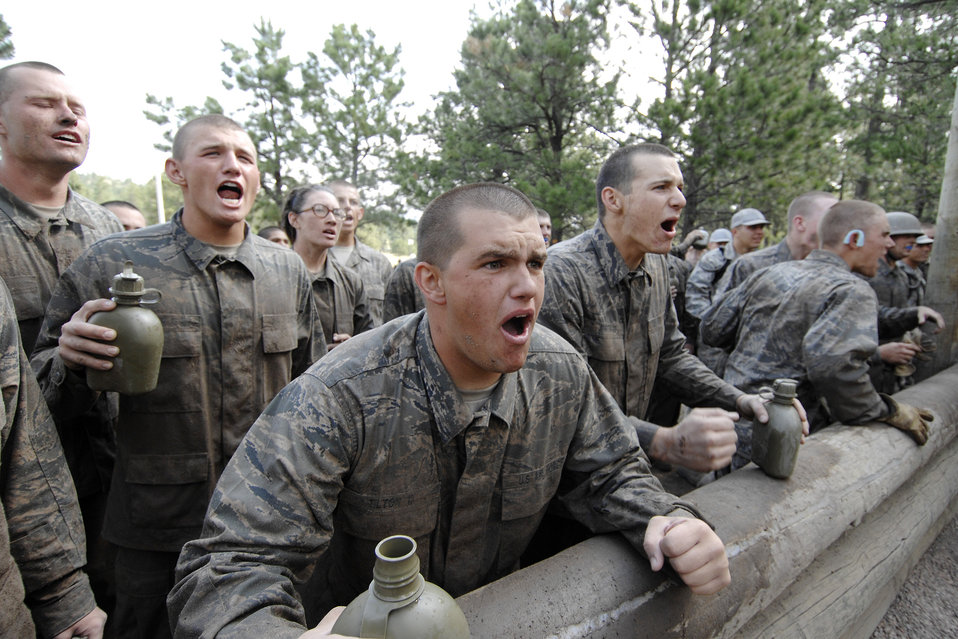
Academy basic field training at Jacks Valley

Air Force Academy Basic Cadet Nicholas Tilton shouts encouragement to his squadron July 21 on the Jacks Valley Assault Course near Colorado Springs, Colo. The Class of 2013 will swear the Honor Oath at their Aug. 5 acceptance parade, when they earn their status as fourth-class cadets. The fall academic semester begins Aug. 6.